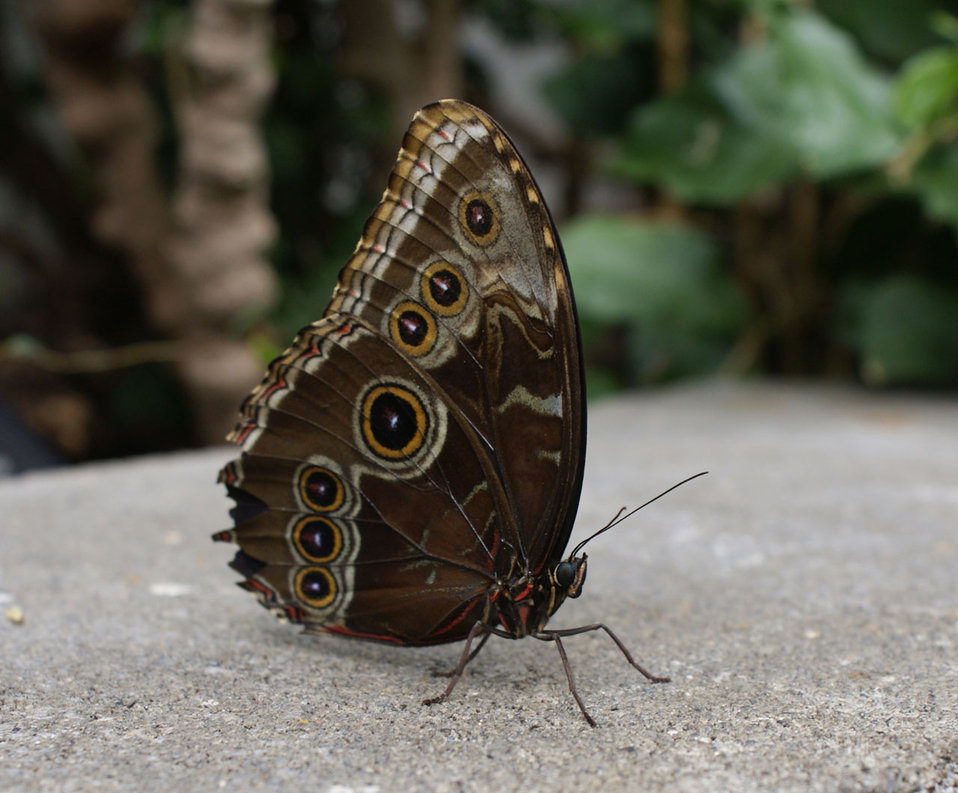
Morpho peleides

Common blue morpho butterfly found from mexico to northern south america. the other side of the wings are a striking blue, but very hard to photograph..